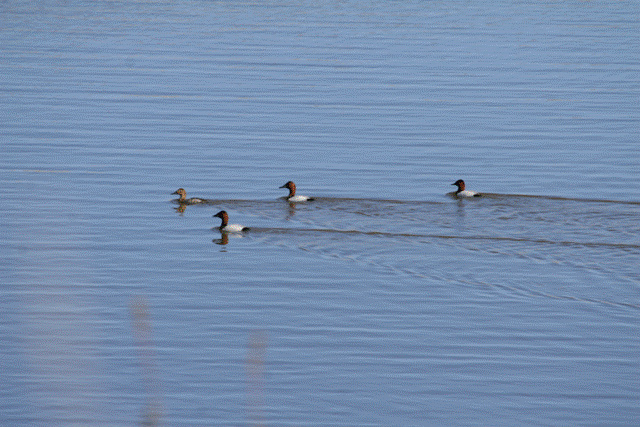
Canvasback Ducks

The Canvasback (Aythya valisineria) is the largest of the North American diving ducks.